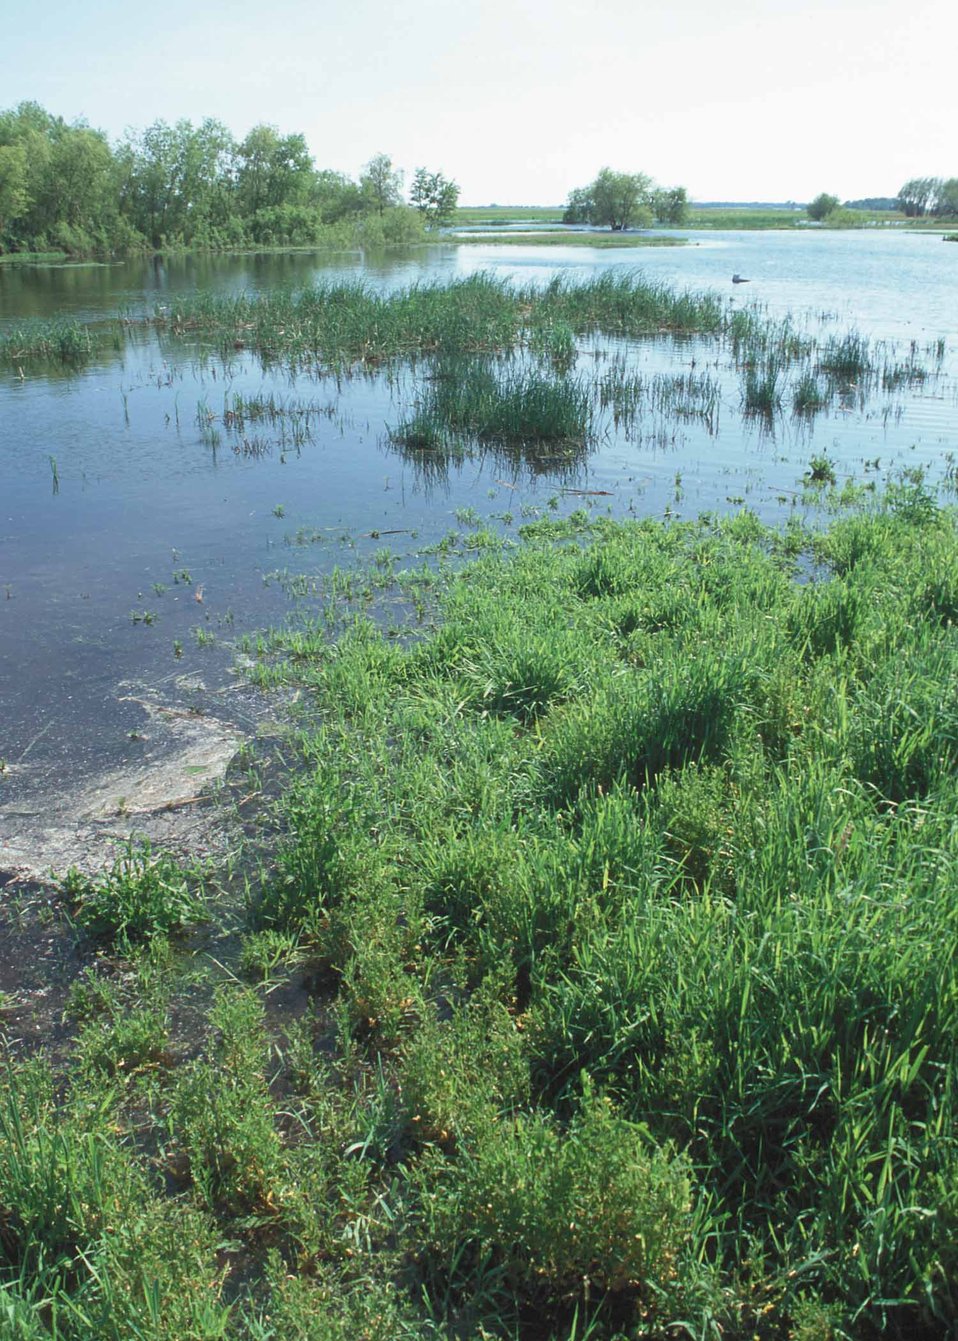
This WRP site in Worth County provides the landonwer many hours of outdoor recreation including bird watching and hunting.